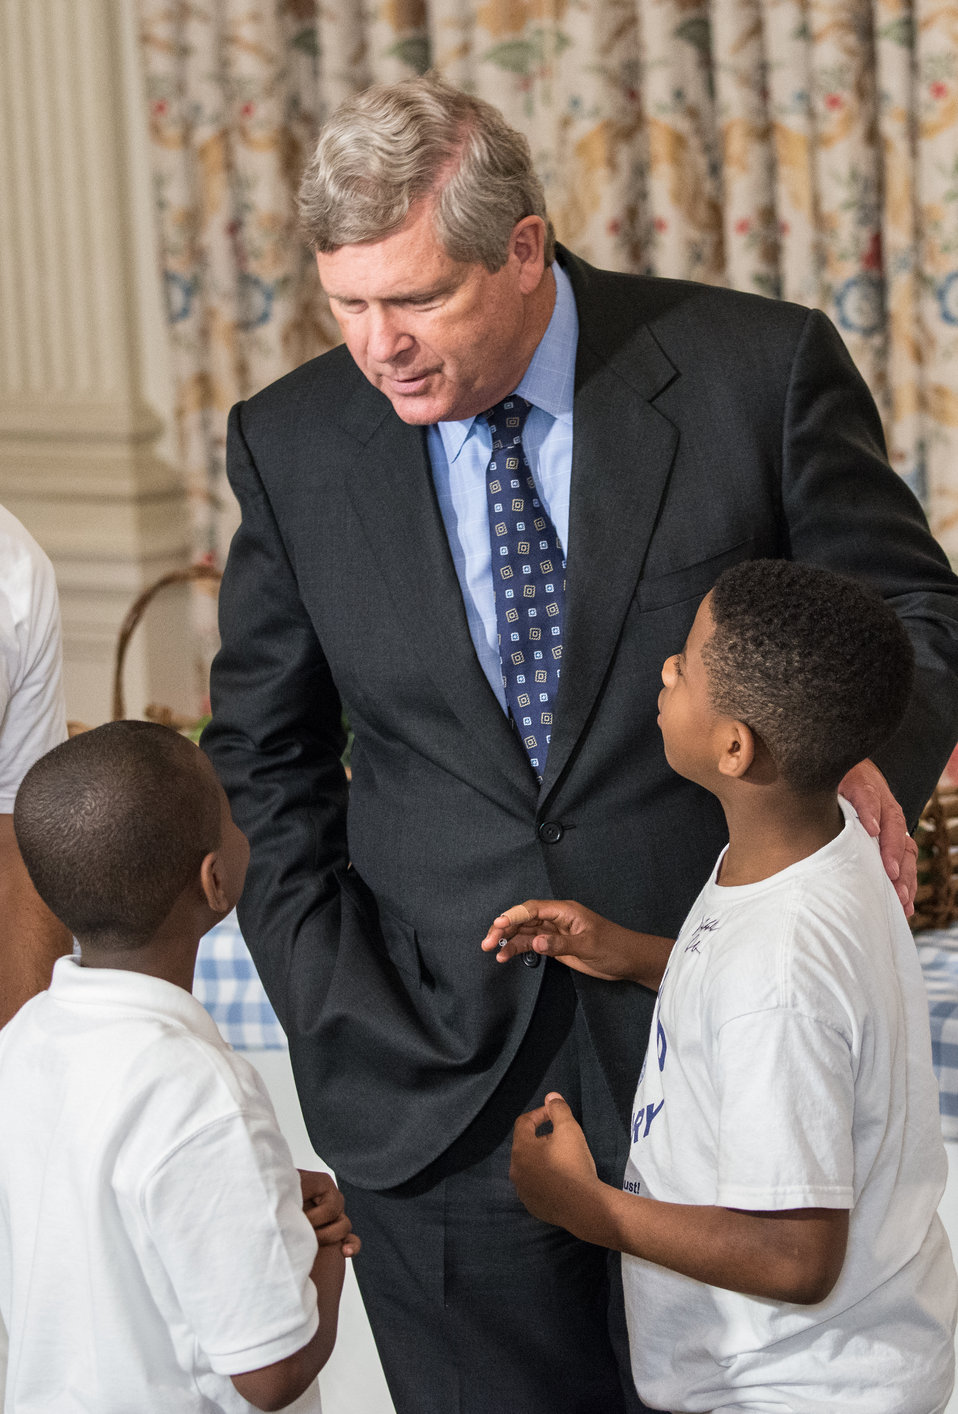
Agriculture Secretary Tom Vilsack with Washington, D.C. students from Cleveland Elementary School, Friendship Public Charter School, Kimball Elementary School, Bancroft Elementary School, Harriet Tubman Elementary School, who helped plant the garden in the spring make lunch from this year’s summer crop with the help of White House chefs and visiting school nutrition directors from Orlando, FL, Dallas, TX, and West Virginia in the State Dining Room of the White House in Washington, D.C. on Thursday, Jun. 12, 2014.